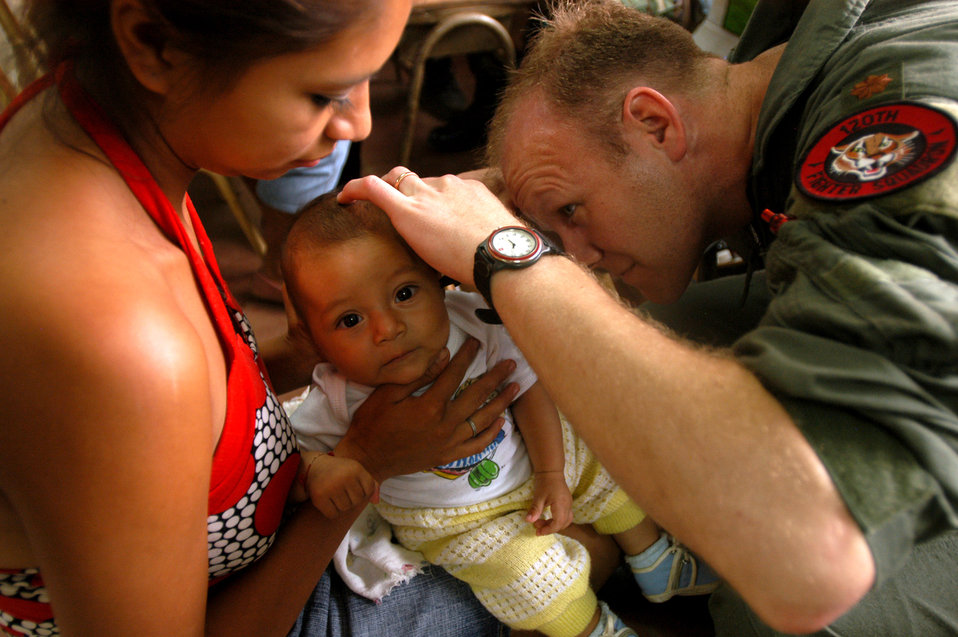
Everything looks good

Maj. (Dr.) Rich Hendershot examines an infant during a visit to an El Salvadorian clinic June 14. Maj. Hendershot and other Airmen assigned to the Colorado Air National Guard's 140th Medical Group were deployed to Sonsonate, El Salvador, for 10 days.